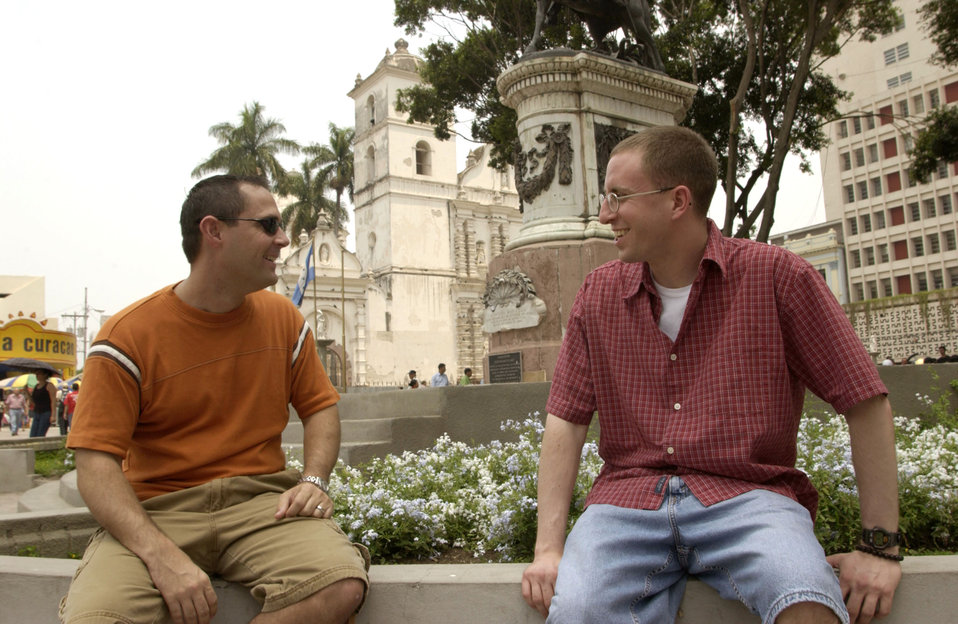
For U.S. troops, Tegucigalpa's good life has its dangers

TEGUCIGALPA, Honduras -- Capts. Dan Beard and Cliff Bayne (left to right) take a breather at a monument in the capital city's Plaza Morazan. The two captains are logistics officers with Joint Task Force-Bravo at Soto Cano Air Base, Honduras. When they get a chance, both said they like to explore the country, which gives them a break from life at the austere base.